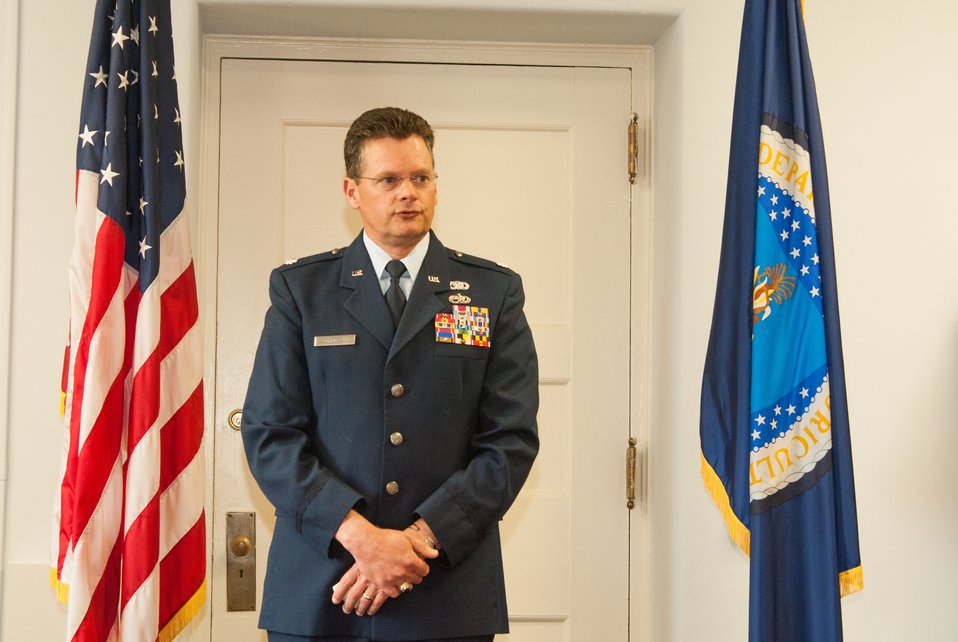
Air National Guard Lieutenant Colonel and U.S. Department of Agriculture (USDA) Office of Human Resources Management (OHRM) Human Resource Specialist Mark Thomas thanks the staff of USDA OHRM Executive Resources for their service during his deployment to Djibouti, Africa in Washington, D.C. on Wednesday, May 15, 2013.